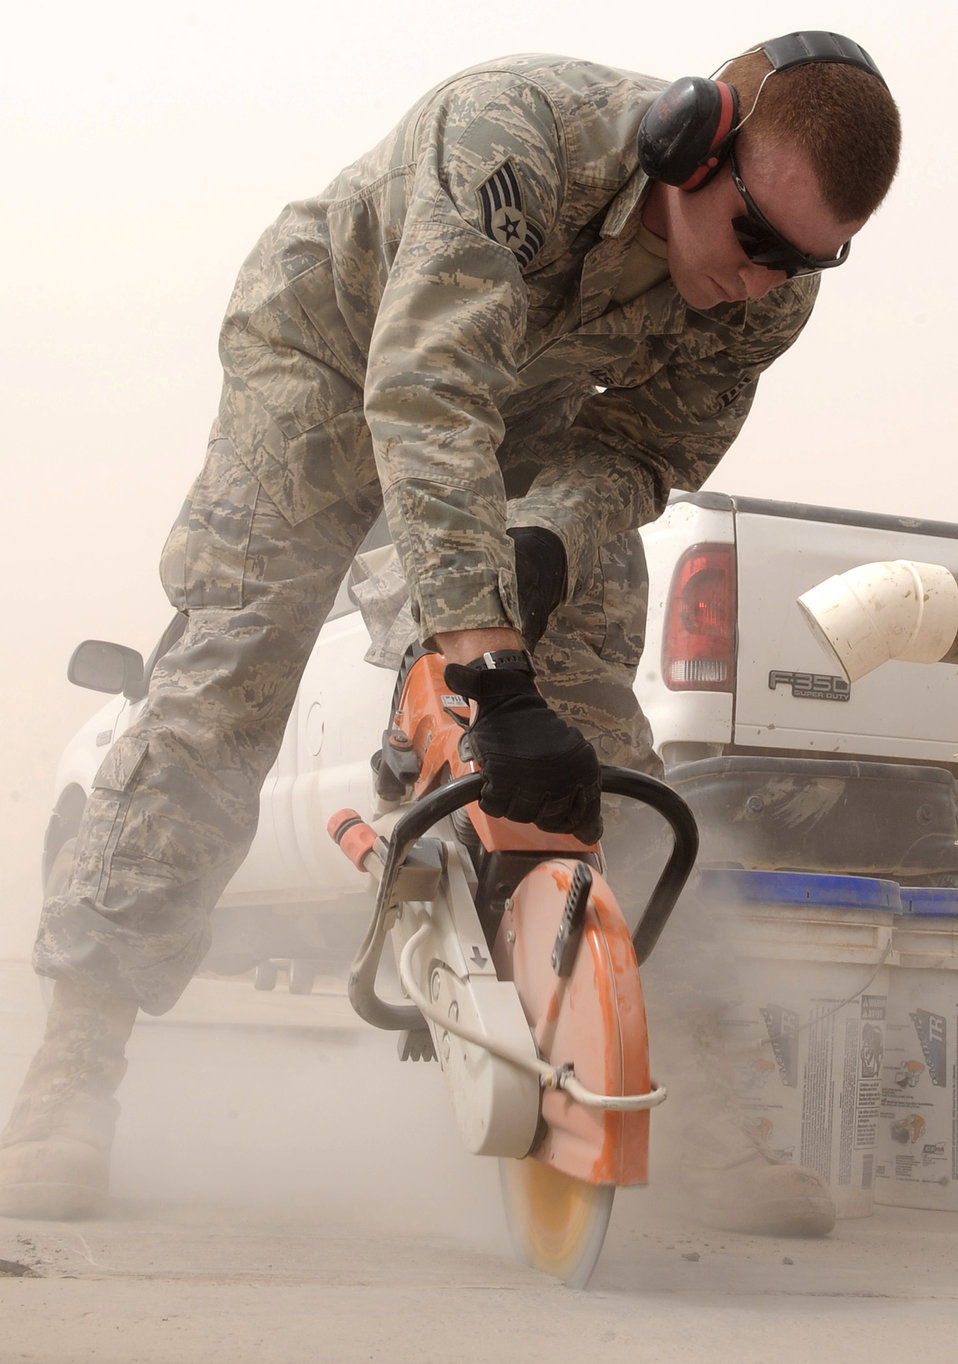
Getting it right

Staff Sgt. Stephan Bryant saws through cement during repairs to a runway May 22 at Joint Base Balad, Iraq. Sergeant Bryant is a pavements and equipment journeyman with the 332nd Expeditionary Civil Engineer Squadron and is deployed from Little Rock Air Force Base, Ark.